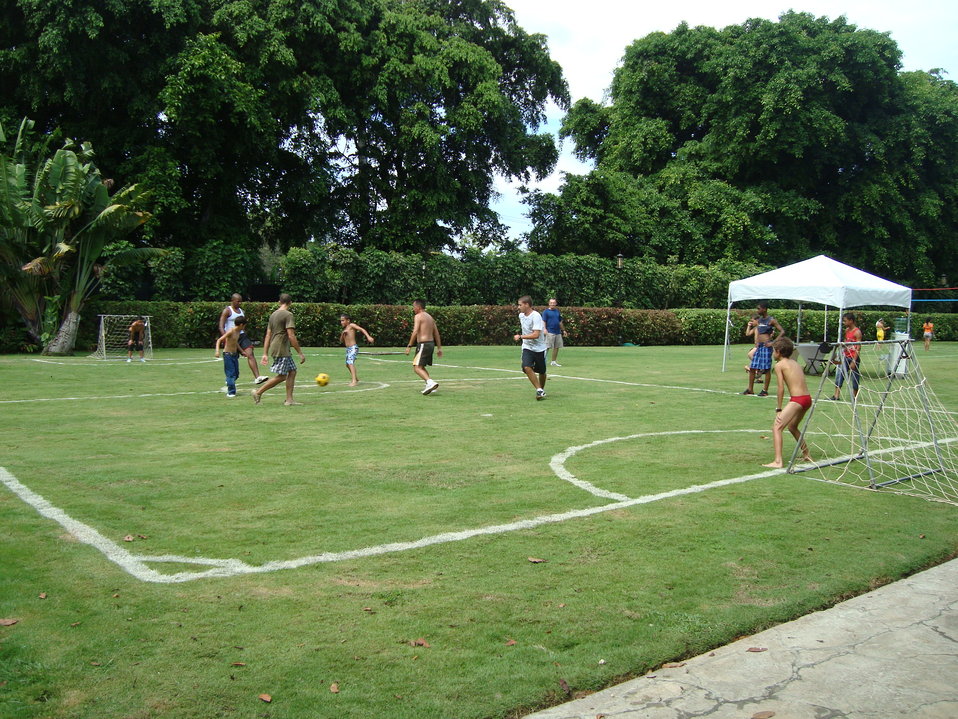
Guests Play Soccer

Guests, including U.S. personnel and local staff, play soccer at the United States Interest Section Havana in Cuba's U.S. Independence Day celebration at Chief of Mission Jonathan D. Farrar's residence in Havana, Cuba, on July 2, 2010.